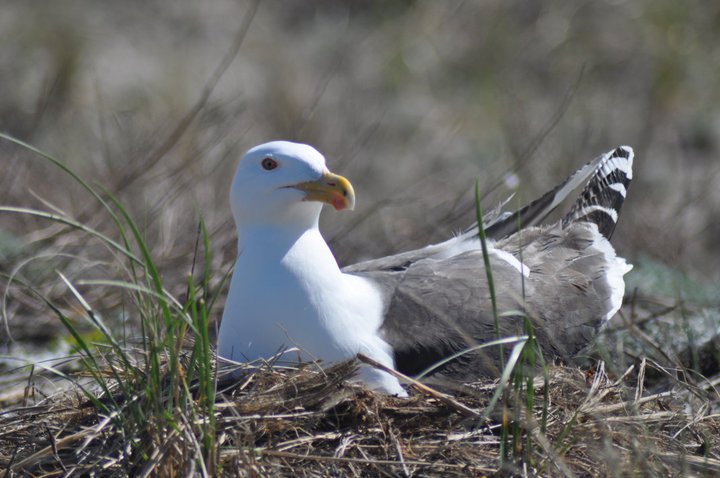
Great Black-Backed Gull

A great black-backed gull at the Nantucket National Wildlife Refuge, MA.